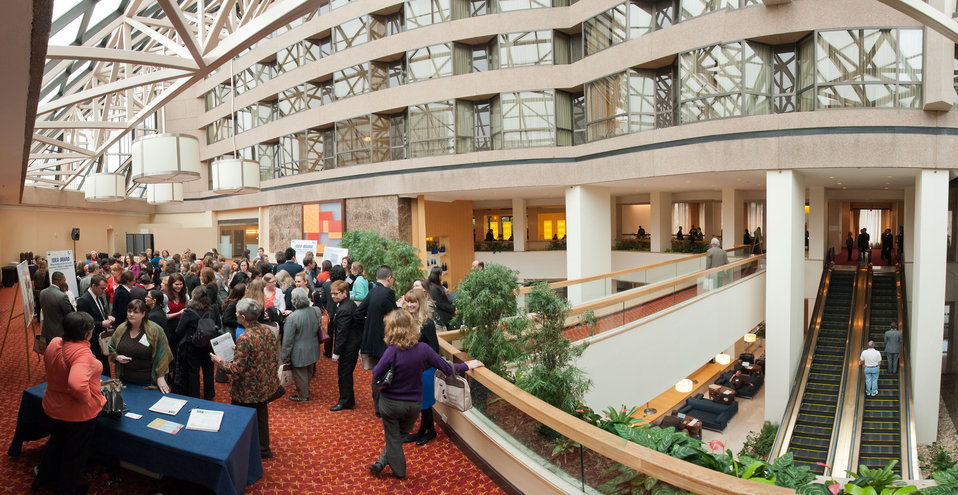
A virtual panorama of the U.S. Department of Agriculture (USDA), 2013 Agricultural Outlook Forum held at the Crystal Gateway Marriott Hotel in Arlington, VA on Friday, Feb. 22, 2013. The breakout session on Women in Agriculture-Speed Networking Event encouraged and promoted the participation of women in American agriculture.